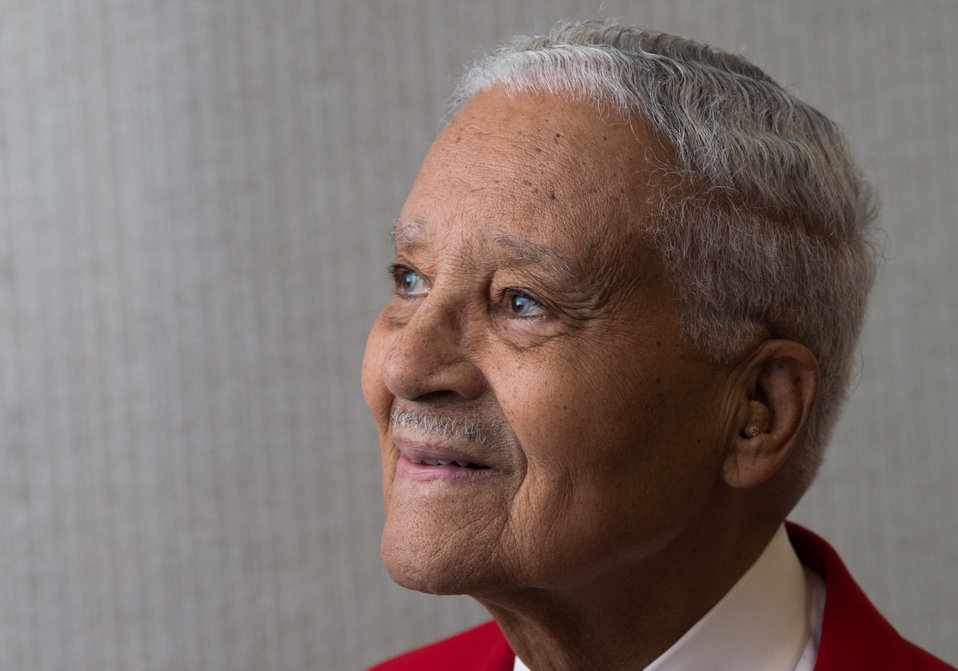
Pilot and Tuskegee Airman, Colonel Charles Edward McGee, U.S. Air Force (USAF) ret. was a guest speaker at the U.S. Department of Agriculture's (USDA) Office of the Assistant Secretary for Civil Rights (OASCR) program “In conversation With Tuskegee Airmen”, which honored the airmen’s successes both overseas and at home at USDA in Washington, D.C. on Thursday Mar. 27, 2014. Col. McGee spoke about his experiences in the Army Air Corp, (later the Army Air Force and U.S. Air Force). Questions from the audience provided several opportunities for discussion about civil rights challenges and how they achieved success and respect.